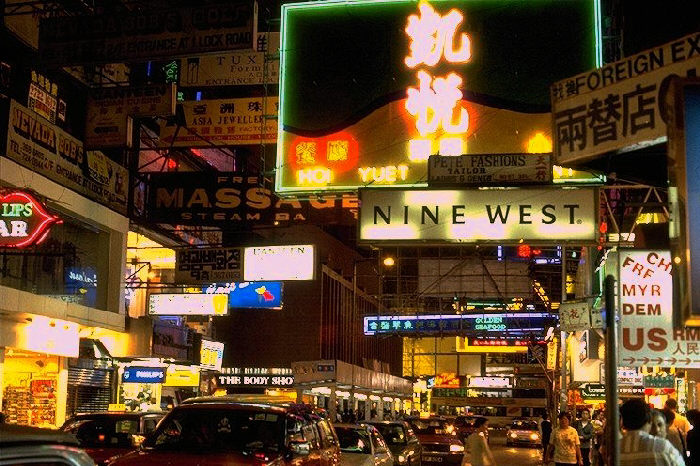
Hong Kong at night.